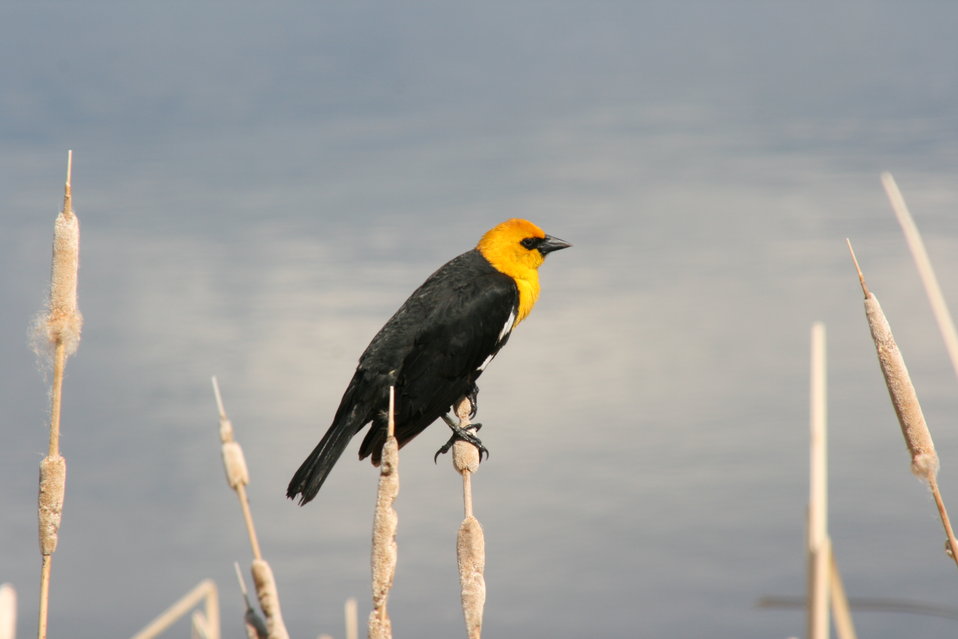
Yellow-headed Blackbird

A male yellow-headed blackbird on his perch of cattail. Bowdoin NWR